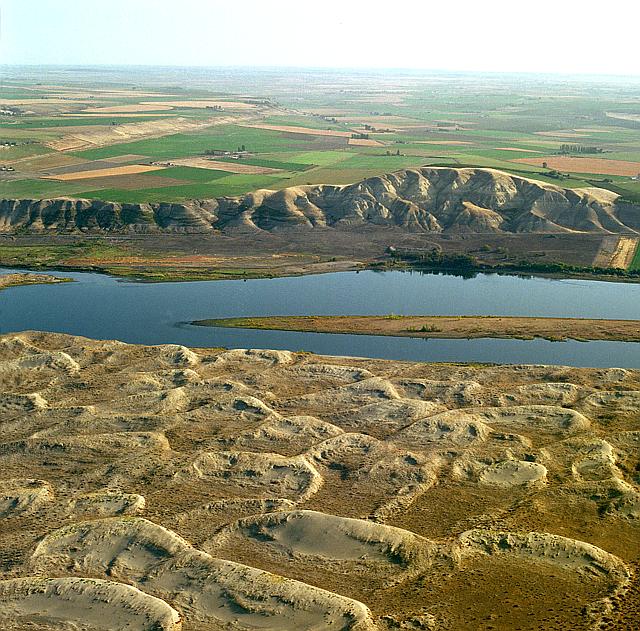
At Pacific Northwest National Laboratory Environmental Molecular Sciences Laboratory, scientists are studying reaction mechanisms at the mineral-water, microbe-mineral, and fluid-fluid interfaces at the molecular scale to understand the effect of these mechanisms on the fate and transport of contaminants at the Hanford Site, a former plutonium production complex in Washington site.